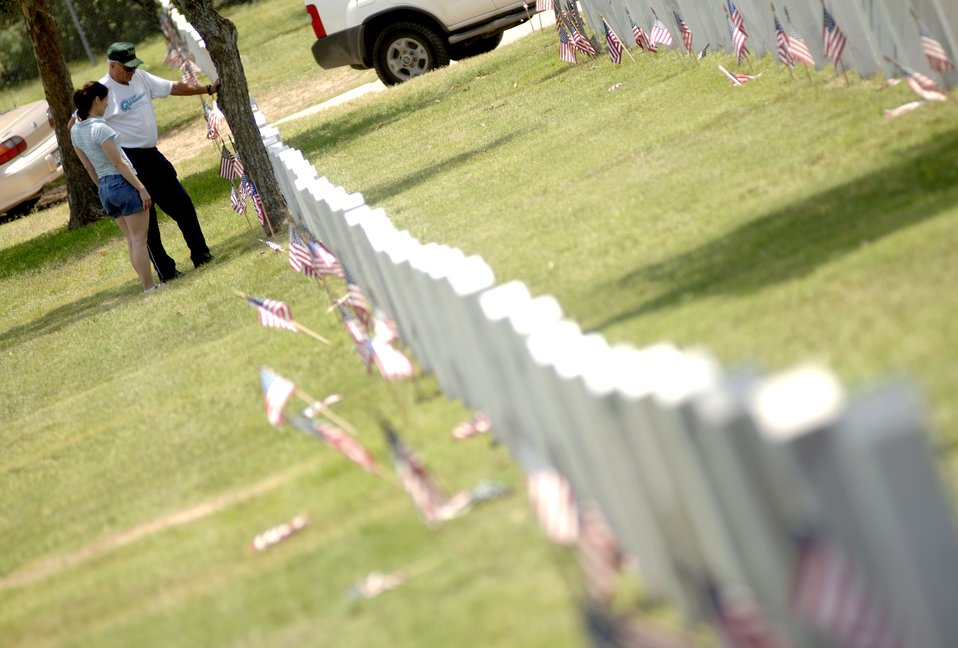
Memorial Day observances

Lorenzo Sanchez and his daughter, Veronica, visit the grave site of his father, Ignacio Sanchez, at Fort Sam Houston National Cemetery in San Antonio on Sunday, May 28, 2006. Ignacio Sanchez immigrated from Mexico in 1914 and served in the U.S. Army during World War II.